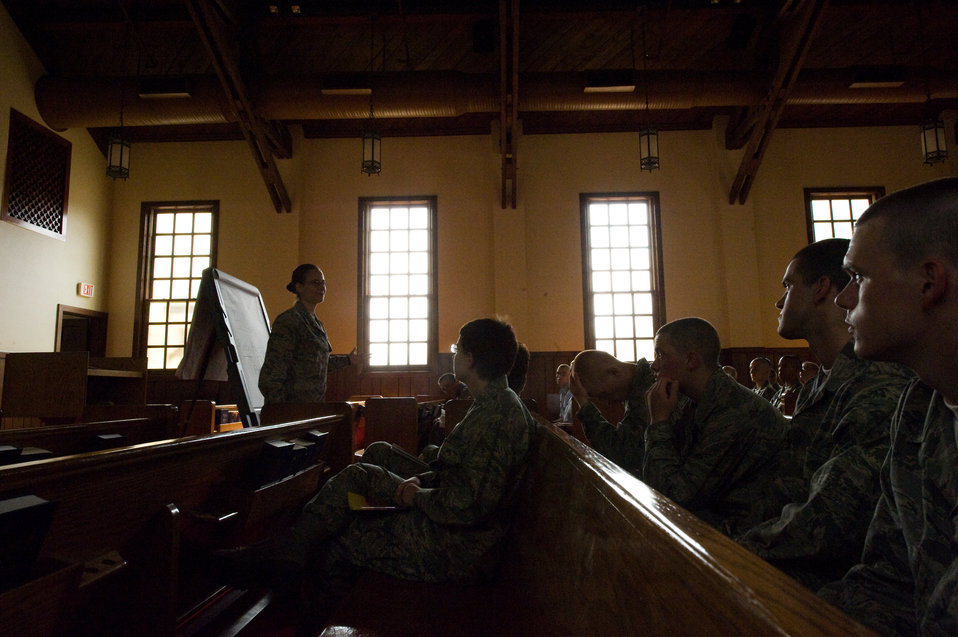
U.S. Air Force Chaplaincy

U.S. Air Force Rabbi, Chaplain, Captain Sarah D. Schechter leads the evening le'il shabbat service on Friday, Sept. 4, 2009 at Lackland Air Force Base's Airmen Memorial Chapel. The more than 25 basic military trainees and other attendees participated in a religious education class that taught them how to prepare for Jewish New Year, Rosh Hashanah. This was followed by the Ma'ariv prayer service for the setting of the sun, and then a meal provided by lay leaders supporting the service. Because of training schedules some ceremonies and events are earlier than traditionally held. By order of commanders, those who want to attend any or all religious services of their choosing are given full permission and opportunity to do so. Chaplain, Captain Schechter is an Operation Iraqi Freedom veteran and considers her deployment there to be one of the highlights of her career. Schechter is the first woman rabbi in the U.S. Air Force.